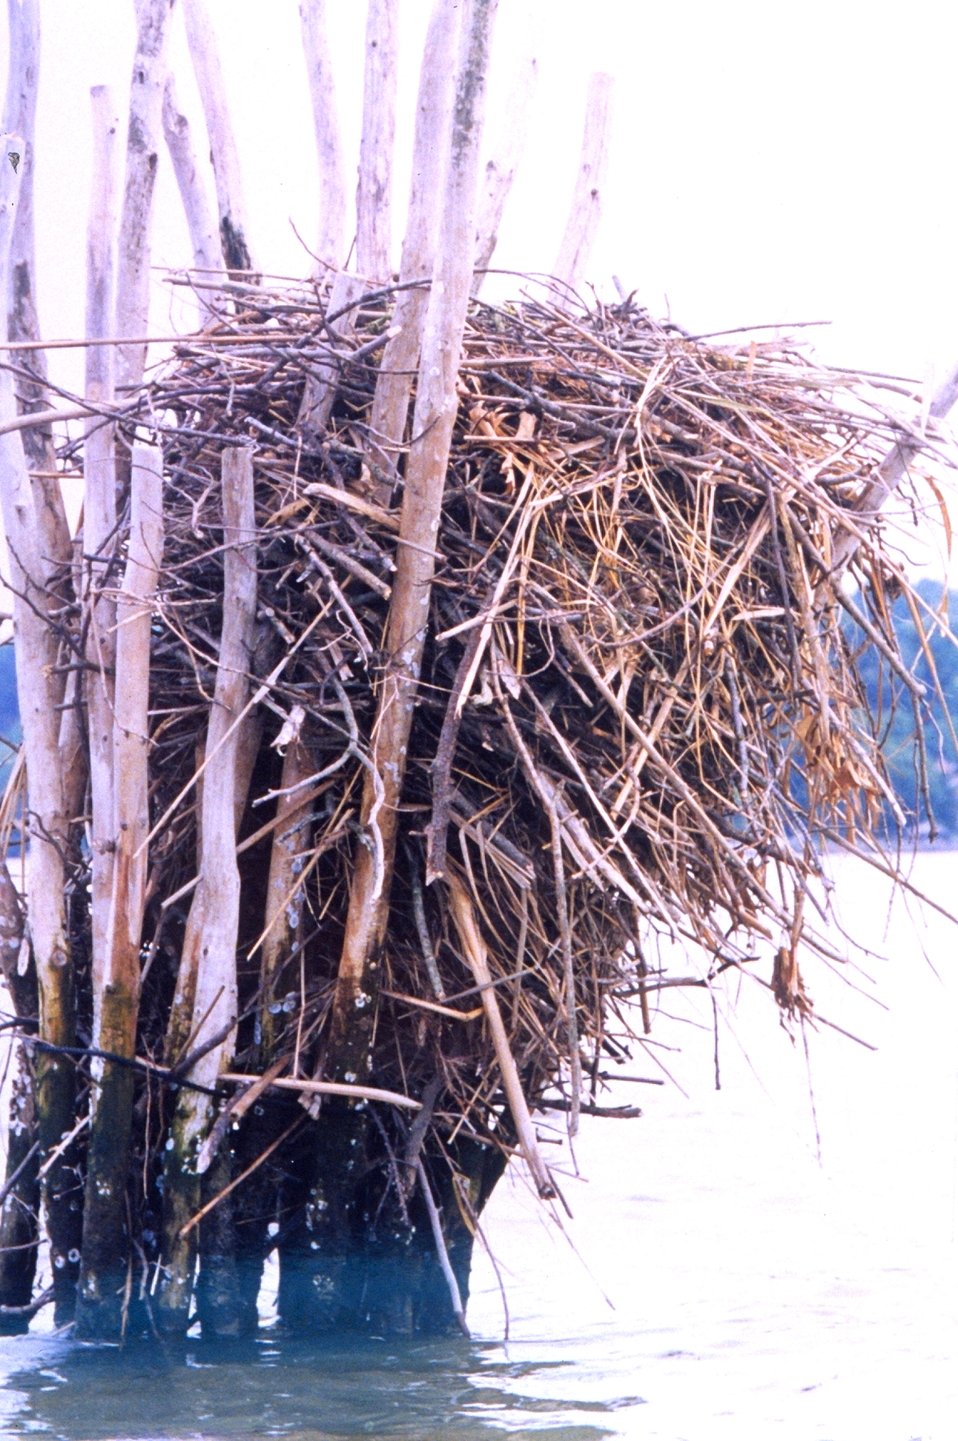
Closeup of an osprey nest built amid pound net posts.